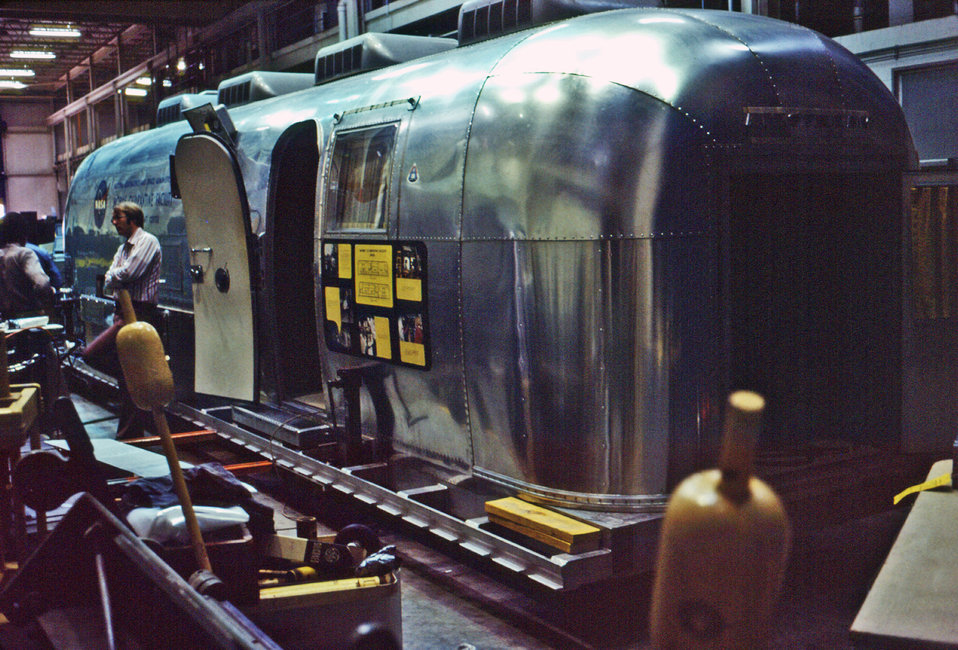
Photographed in 1976, this was the outside of the CDC's mobile quarantine facility, or MQF, that was located in a Chamblee, Georgia warehouse.